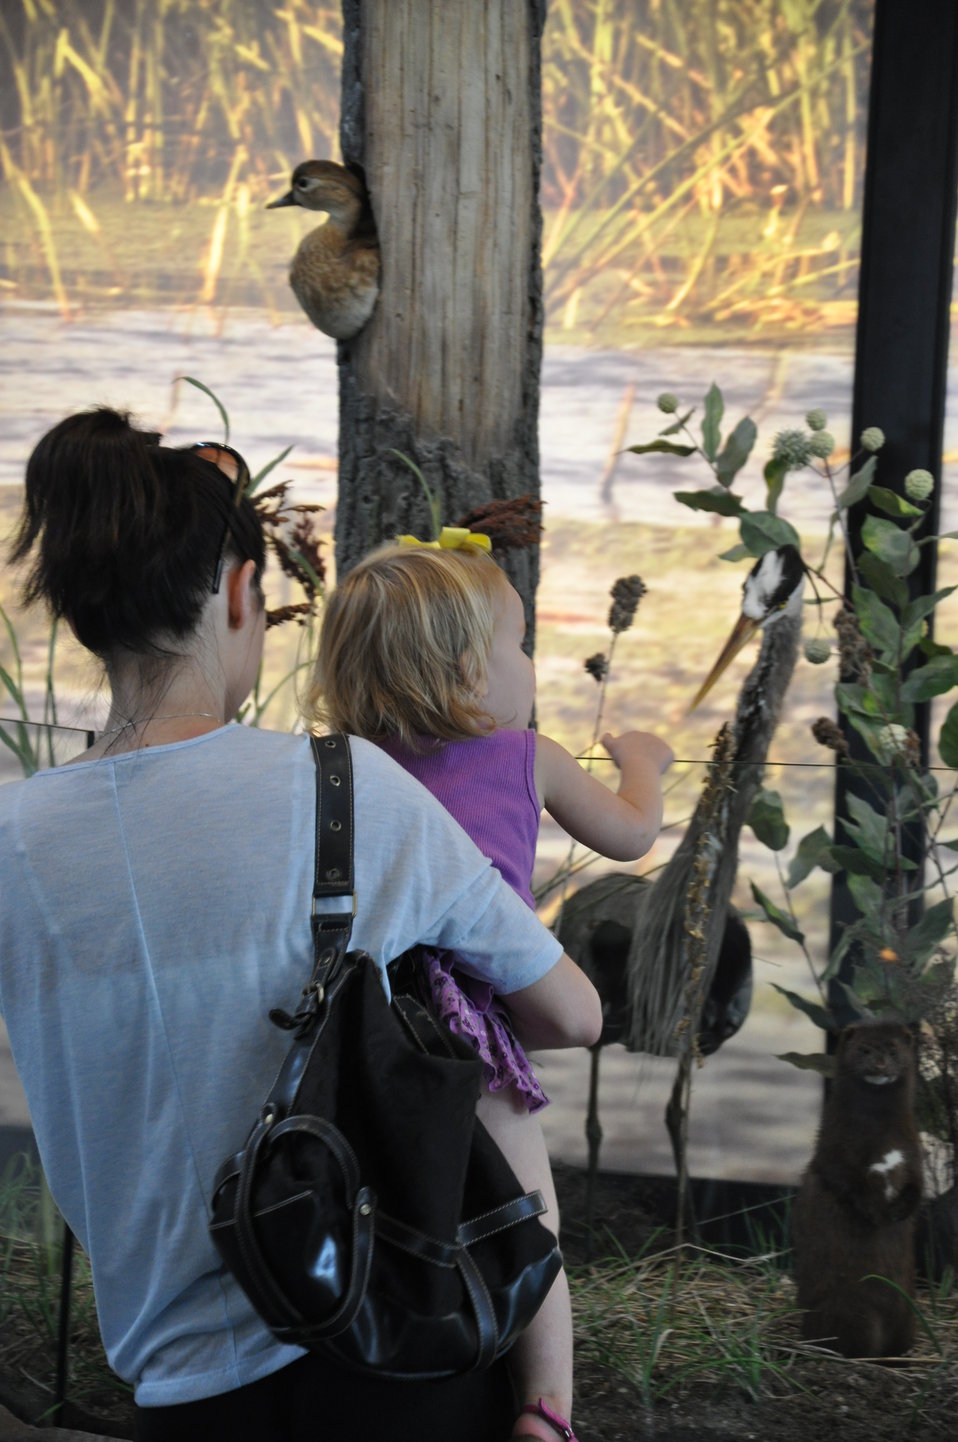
FWS La Crosse 194